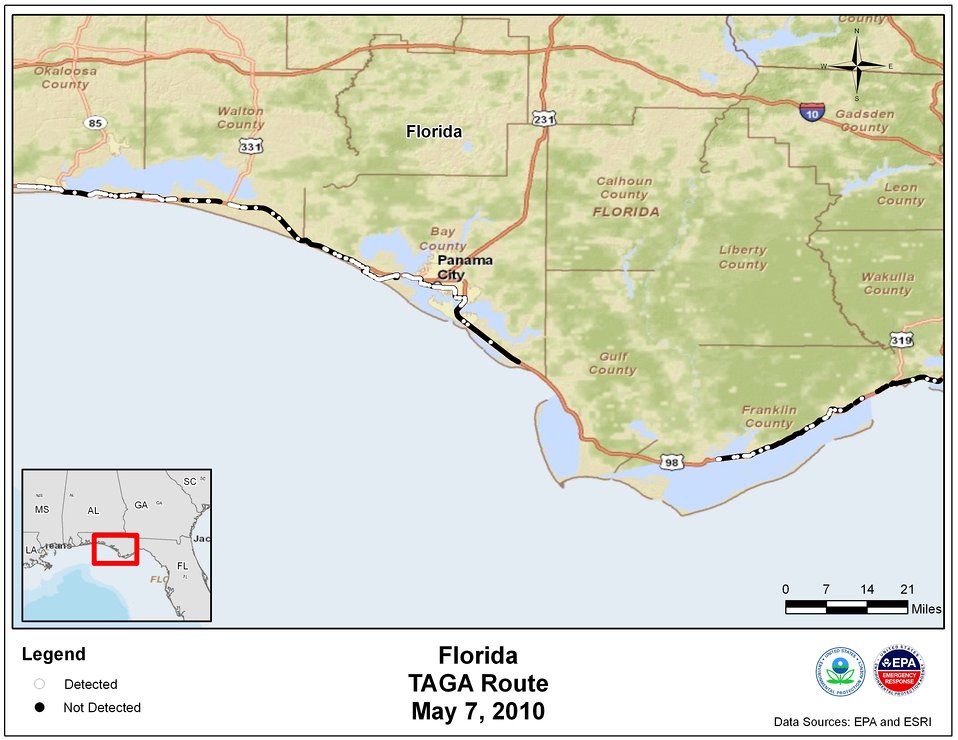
EPA TAGA Air Monitoring Locations May 7, 2010